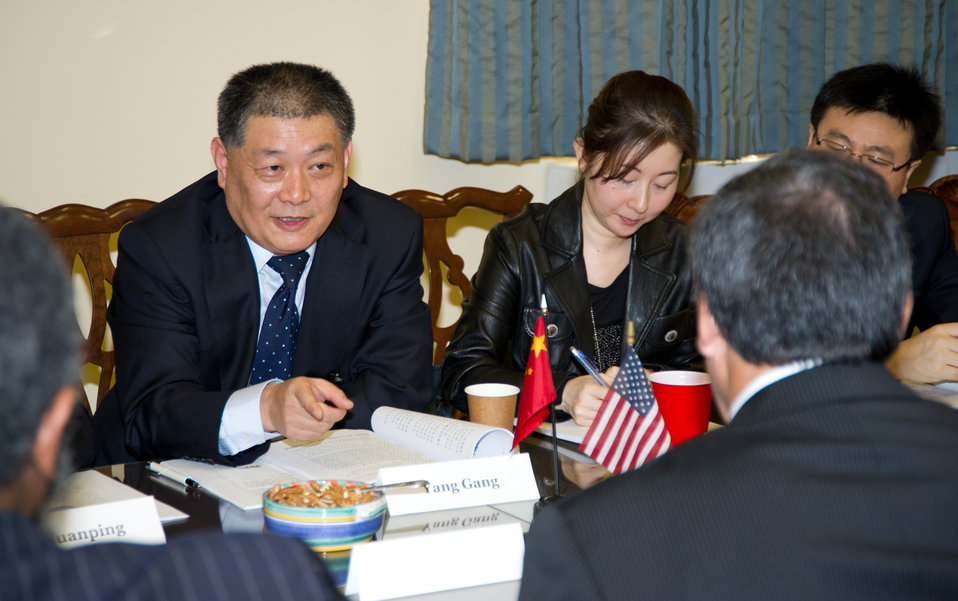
General Administration of Quality Supervision, Inspection and Quarantine (AQSIQ) Vice Minister Yang Gang left), talked with Agriculture Under Secretary for Marketing and Regulatory Programs Ed Avalos (right) on Tuesday, Feb. 14, 2012, in Washington, D.C.